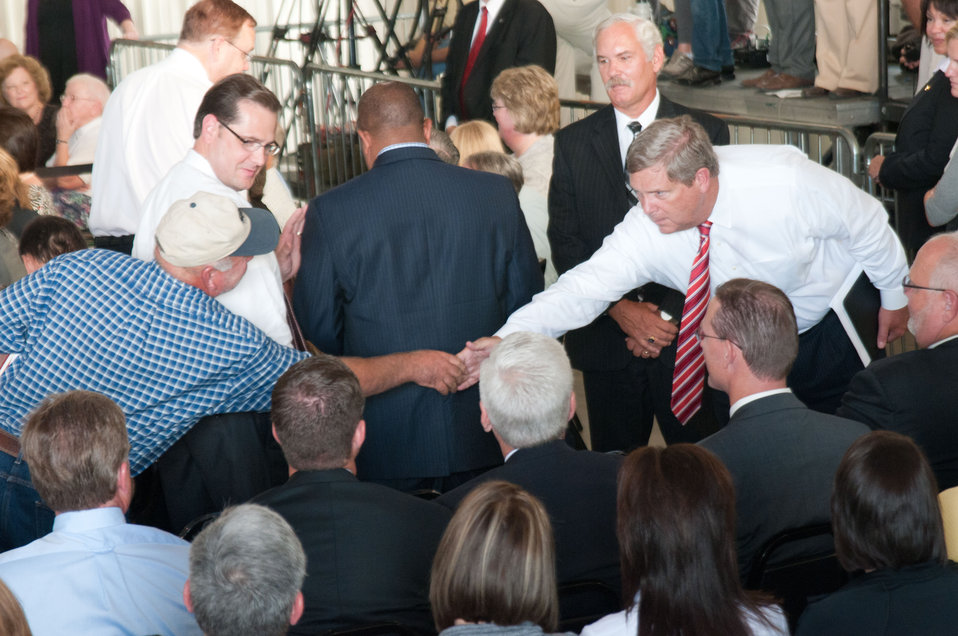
U.S. Department of Agriculture Secretary and chair of the White House Rural Council, Tom Vilsack, reaches out to meet the audience at the Northeast Iowa Community College, IA, prior to the White House Rural Economic Forum, on Tuesday, August 16, 2011.